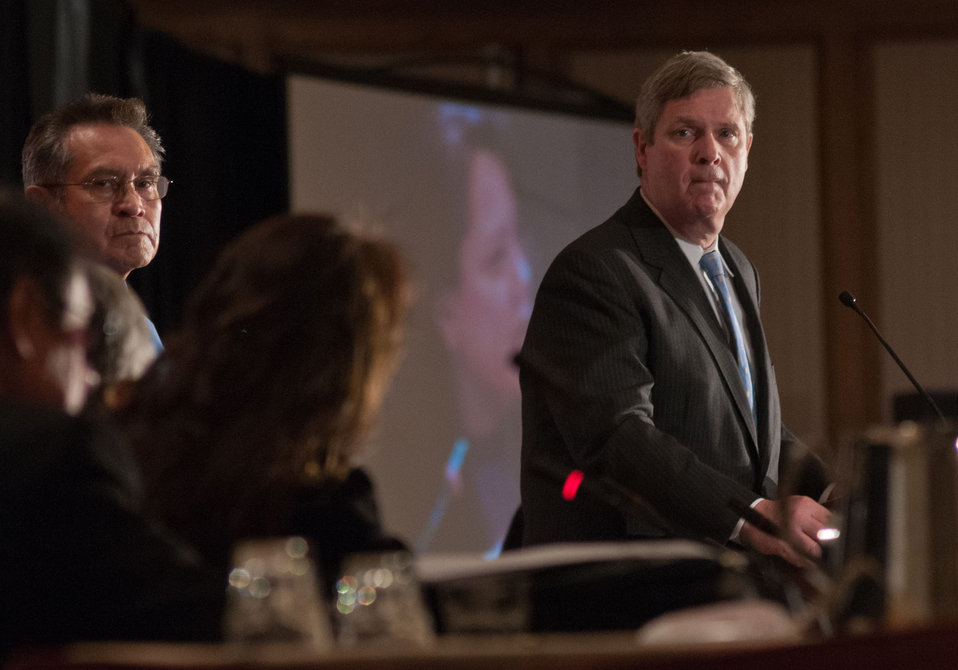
Agriculture Secretary Tom Vilsack listens to Affiliated Tribes of the Northwest Indians’ Fawn Sharp (far left) comment and invite teh Secetary to a future event, Agriculture Secretary Tom Vilsack listens to Affiliated Tribes of the Northwest Indians’ Fawn Sharp (far left) comment and invite the Secretary to a future event, at the National Congress of American Indians Tribal Nations Legislative Summit at L’Enfant Plaza Hotel in Washington, D.C., on Wednesday March 7, 2012. Secretary Vilsack has made improving relations with Native American Tribes a priority by creating the Office of Tribal Relations and directed all U.S. Department of Agriculture (USDA) agencies to be more aware of tribal issues and engage in tribal consultation and collaboration. Secretary Vilsack reiterated USDA’s support to Native American communities with financial support for electric, broadband and wastewater infrastructure, and providing families and businesses with home loans and business grants. Secretary Vilsack emphasized USDA’s participation in the First Lady’s Lets Move in Indian Country initiative to combat childhood obesity in tribal communities.